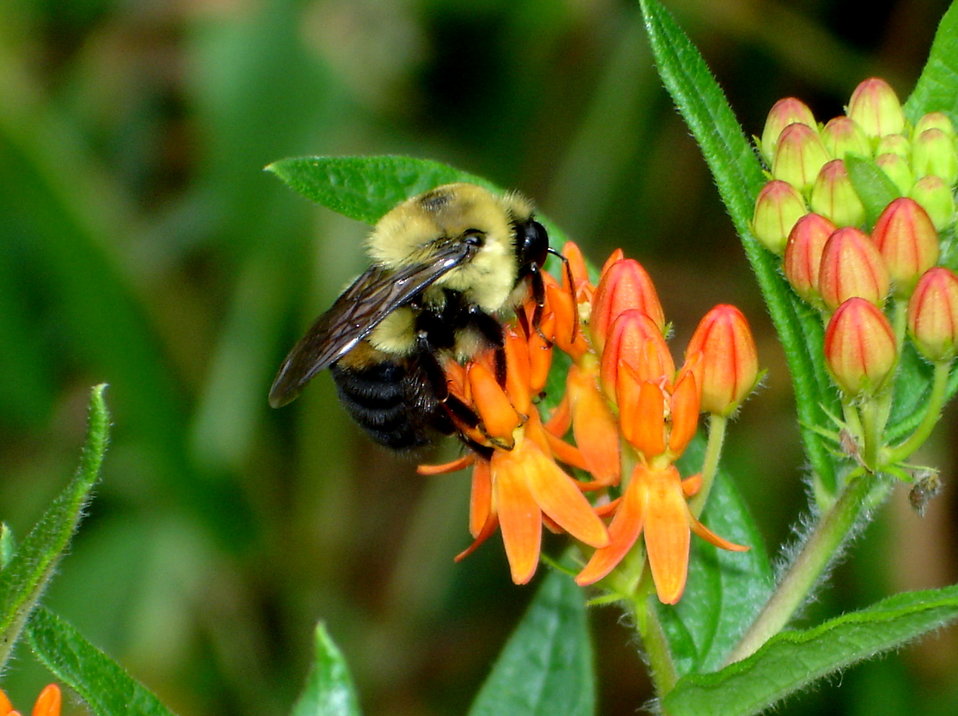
Bumblebee Butterfly Weed

Bumblebee on butterfly weed.